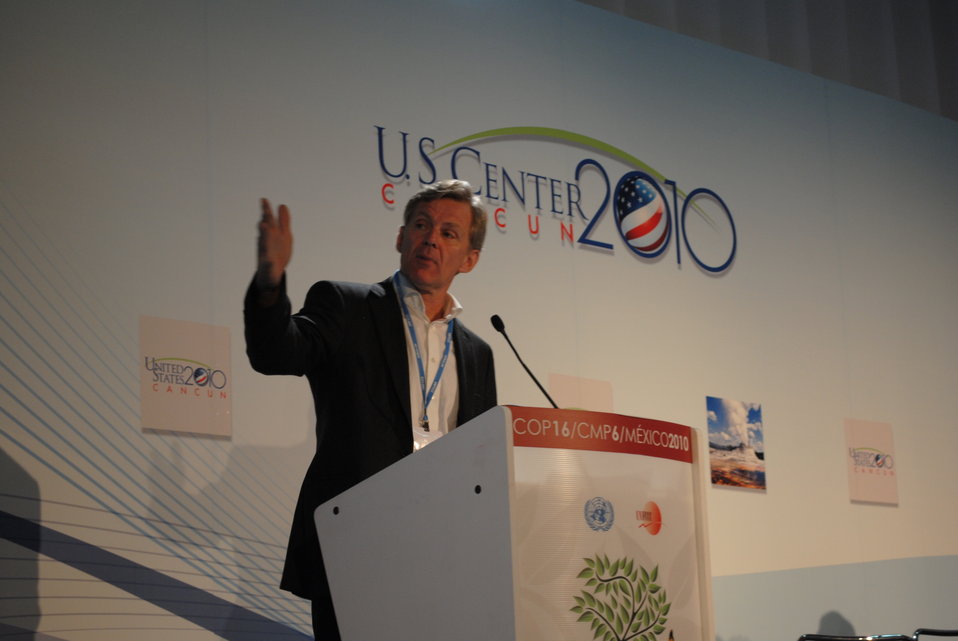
A panelist presents during a side event at the U.S. Center at COP-16 in Cancun, Mexico, on December 3, 2010.